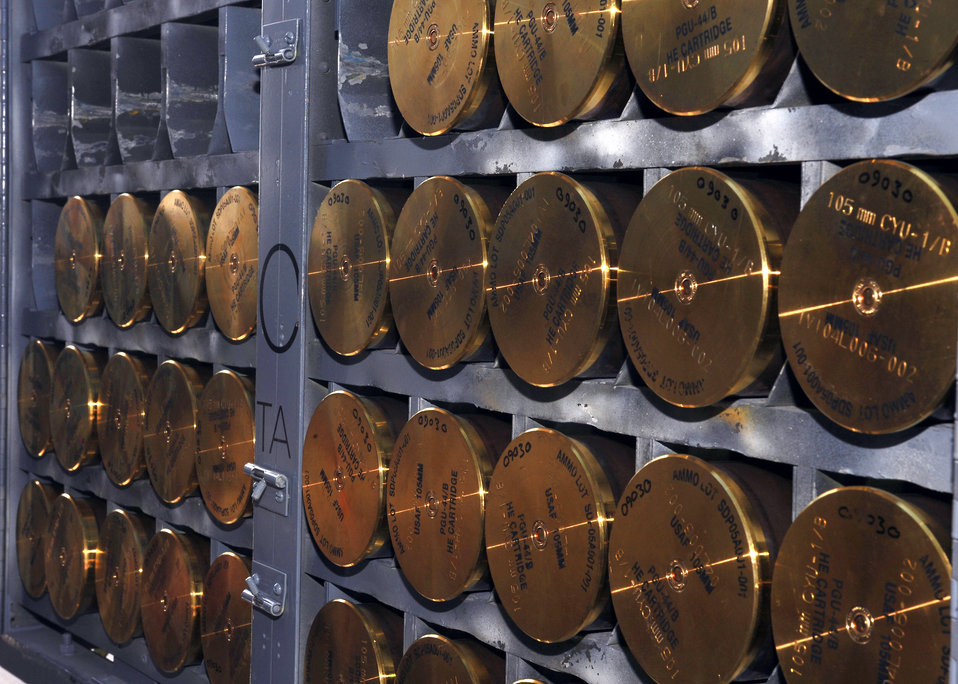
Cannon ammo Airmen ready for gunship arrival

Airmen with the 27th Special Operations Equipment Maintenance Squadron Munitions Flight practiced loading 105 mm cannon rounds like the ones shown here into an aerial gunner inside a 16th Special Operations Squadron AC-130H Spectre gunship during training at Cannon Air Force Base, N.M.Feb. 6. The Air Force Special Operations Training Center observed the loading procedures to help create a formal training program for use throughout Air Force Special Operations Command.